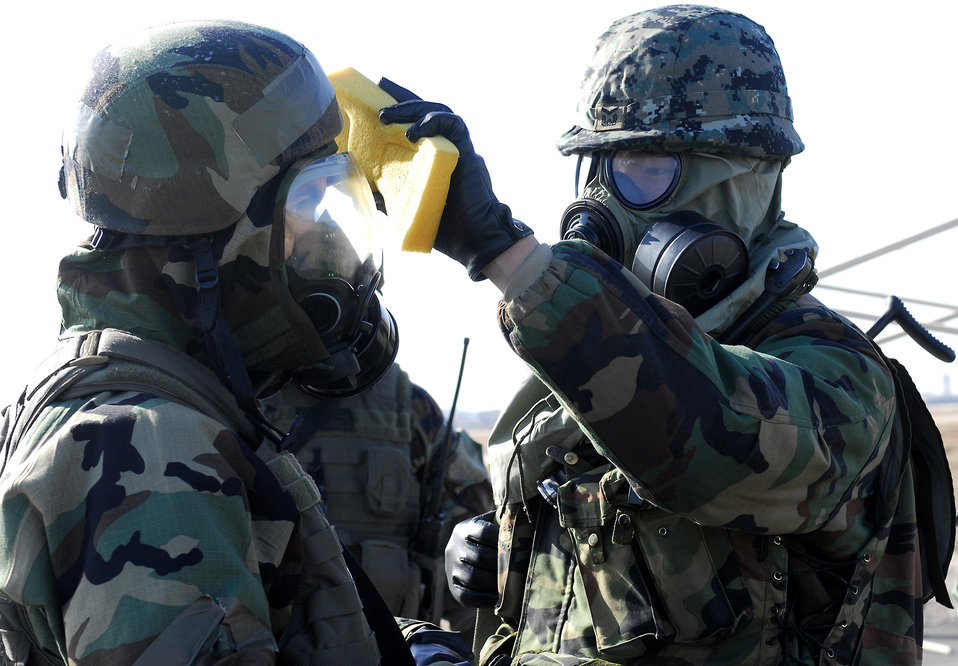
Squadron deployment tests Kunsan's readiness

A South Korean army soldier from 7th Brigade Special Forces helps his American counterpart during a decontamination process Jan. 16 at Kunsan Air Base, South Korea. South Korean army soldiers and 8th Security Forces Squadron members demonstrate the teamwork necessary to carry out the combined mission of the two allies stationed at Kunsan AB during a peninsula-wide operations readiness exercise.